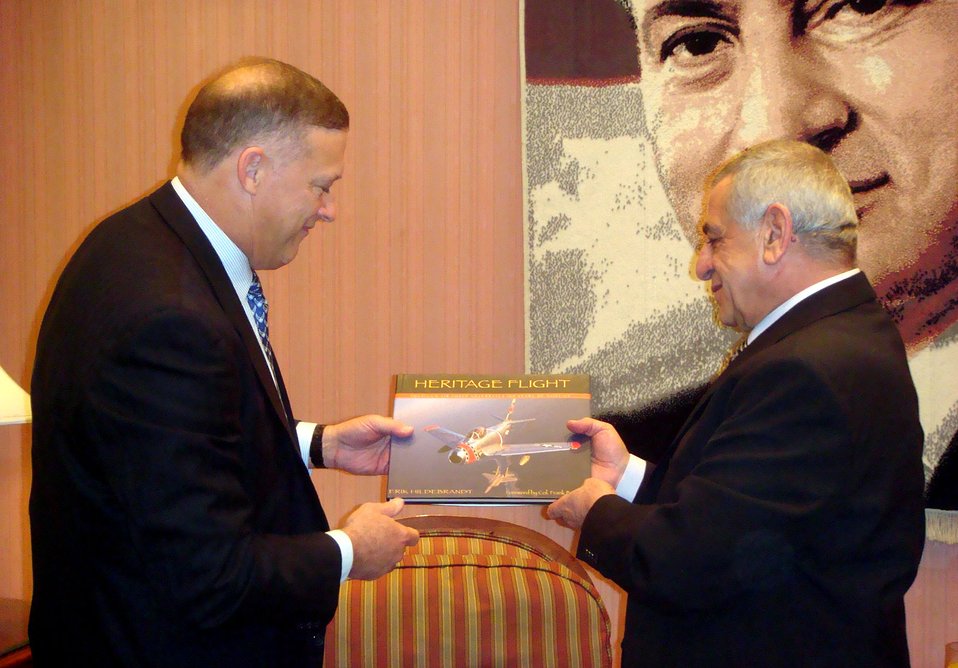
CENTAF commander meets with key officials in Egypt

Lt. Gen. Gary North, U.S. Central Command Air Forces commander, presents a gift to Air Marshal Magdi Sharawi, Egyptian Air Forces Commander-in-Chief, at the Ministry of Defense in Cairo Jan. 29.